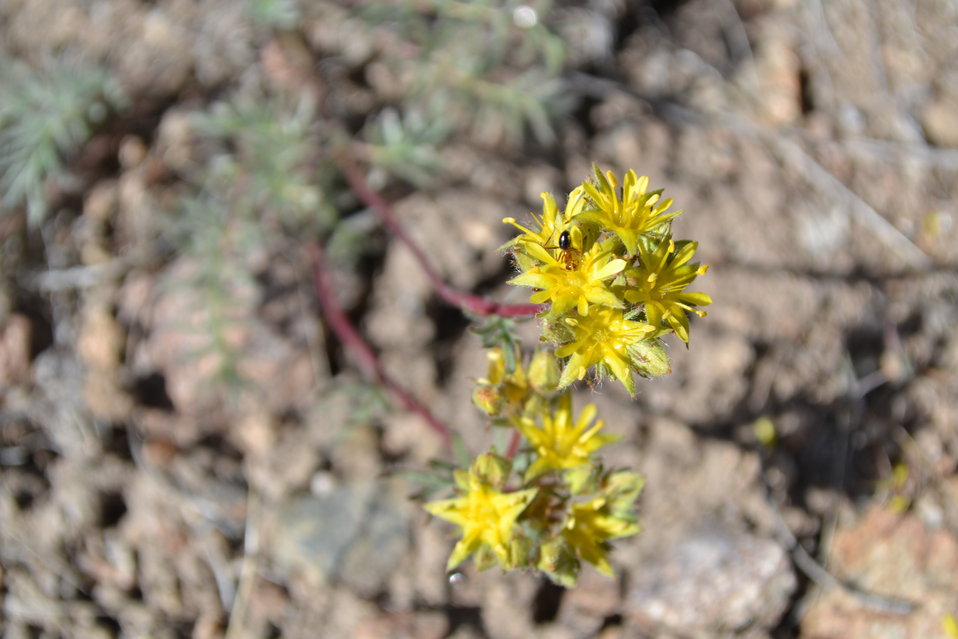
Webber's ivesia (Ivesia webberi), is a member of the rose family. All known populations of Webber’s ivesia are within the transition zone between the eastern edge of the northern Sierra Nevada and the northwestern edge of the Great Basin.